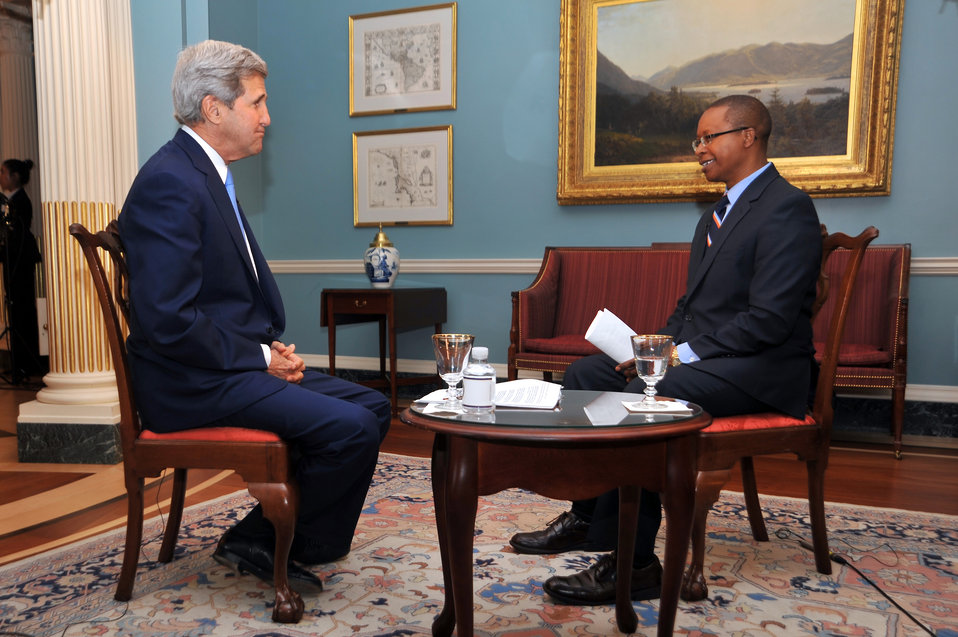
Secretary Kerry is Interviewed by VOA's Makori

U.S. Secretary of State John Kerry is interviewed by Vincent Makori from VOA English-to-Africa's Africa 54 program about the Secretary's upcoming trip to Africa, at the U.S. Department of State in Washington, D.C., on April 28, 2014.